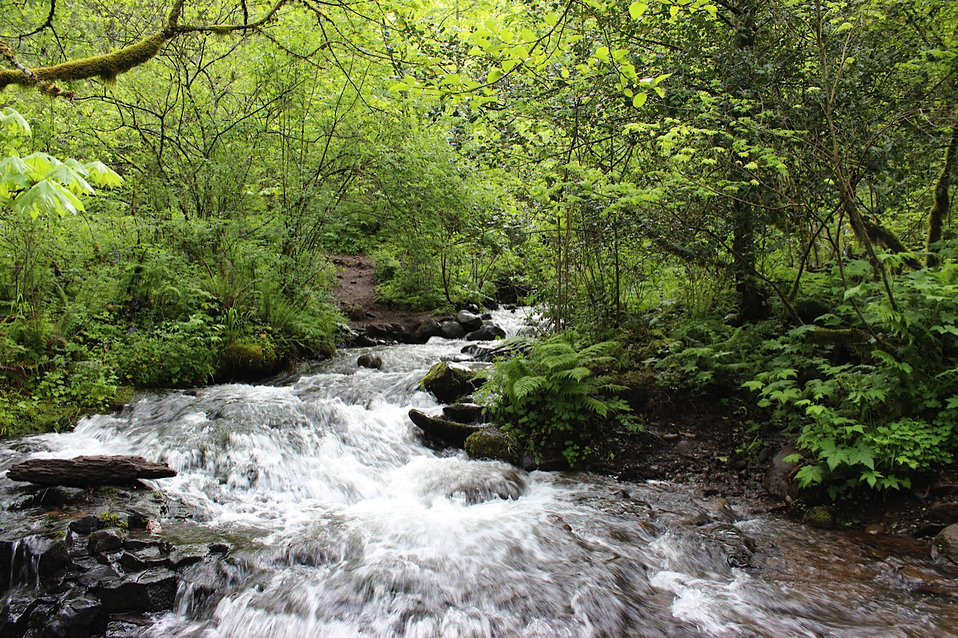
Snowmelt on Mount Hood sends ample water down a stream in Oregon.